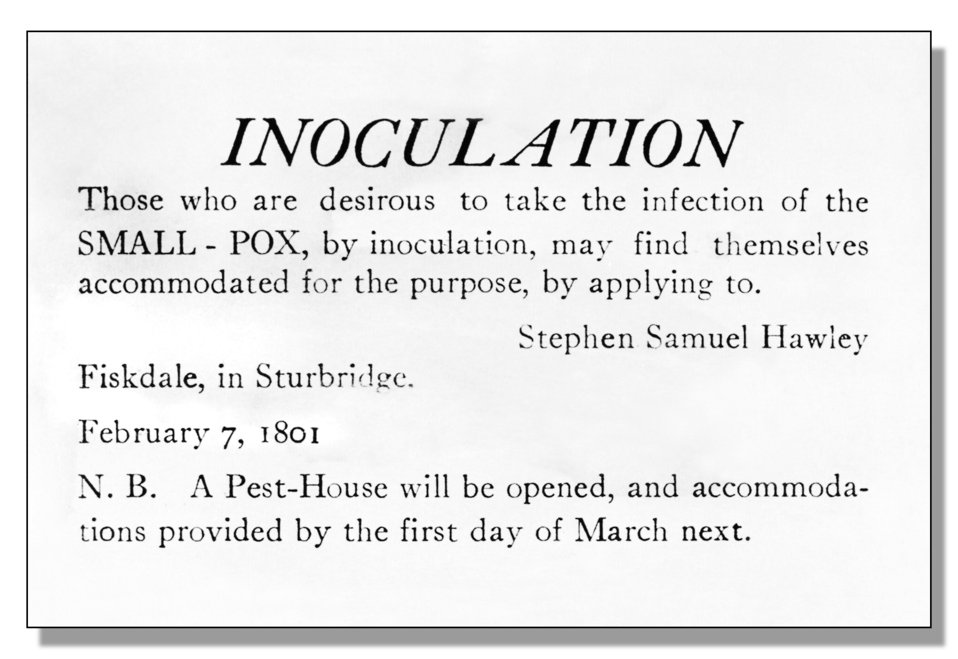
Smallpox Inoculation sign from 1801.